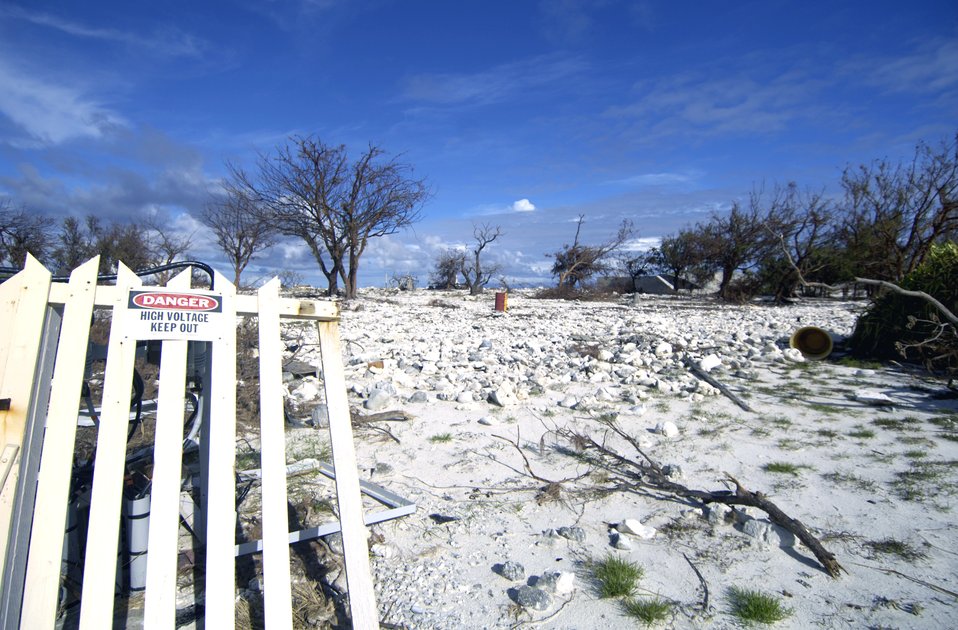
Teams fly to Wake Island to assess damage

Dead trees, debris and coral on Wake Island are signs of the destruction left by Super Typhoon Ioke when it hit the island Aug. 31.